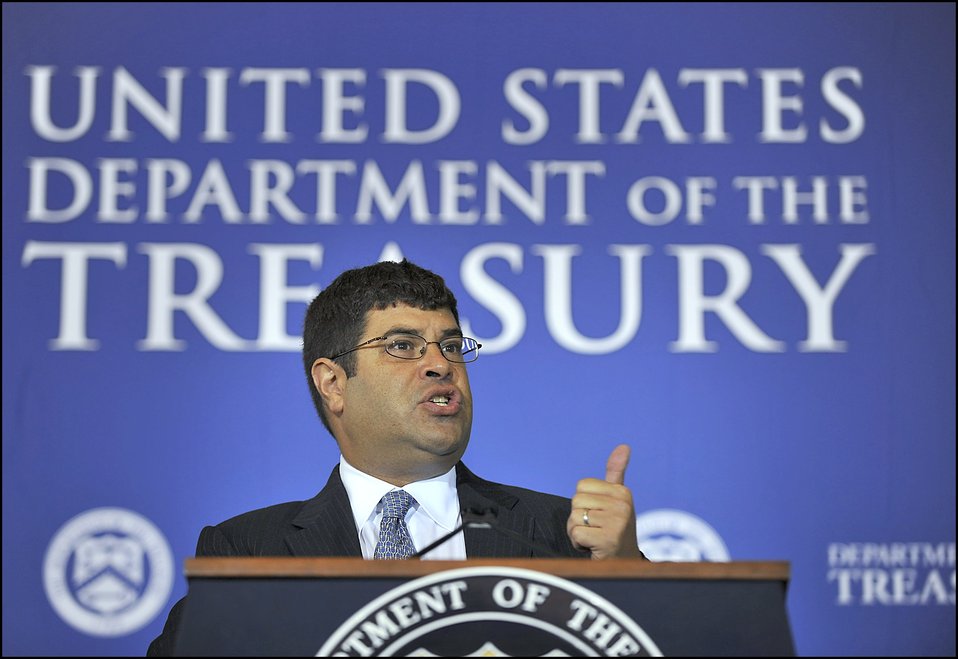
20th Anniversary of Treasury’s Office of Technical Assistance

Deputy Secretary of the Treasury Neal Wolin provided opening remarks on the work of the Office of Technical Assistance. In the last 20 years, OTA has helped finance ministries and central banks in nearly 100 developing countries around the world strengthen their capacity to manage public finances, support their growing economies and combat economic crimes, including corruption, which in turn helps governments provide more effective services to their citizens.